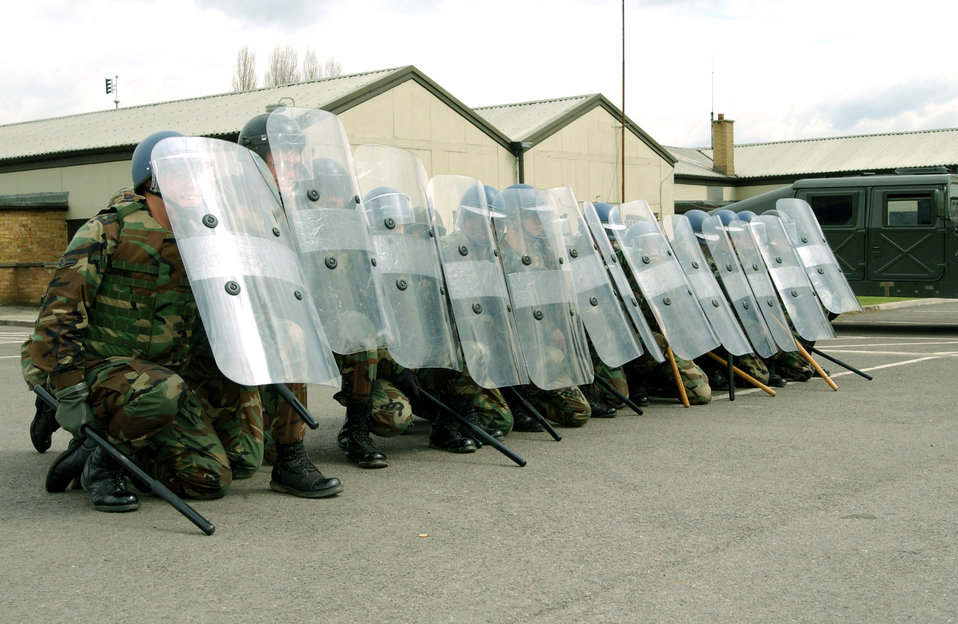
Anger management

ROYAL AIR FORCE FAIRFORD, England - Airmen from the 100th Security Forces Squadron receive training on confrontational management skills here April 8. The training emphasizes the importance of riot control. The 100th SFS is from Royal Air Force Mildenhall, England.